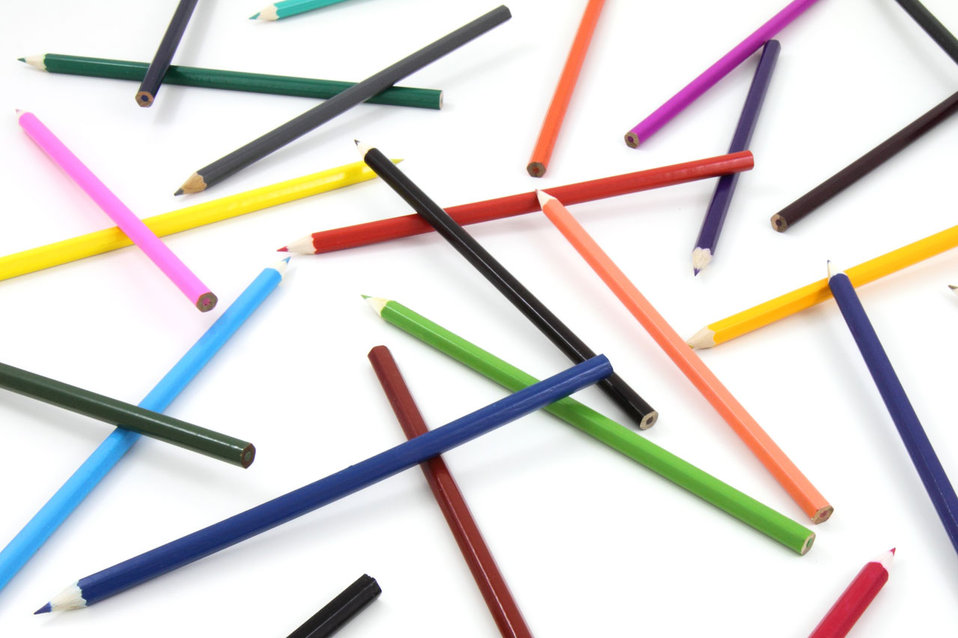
Pencils

Colored pencils everywhere.